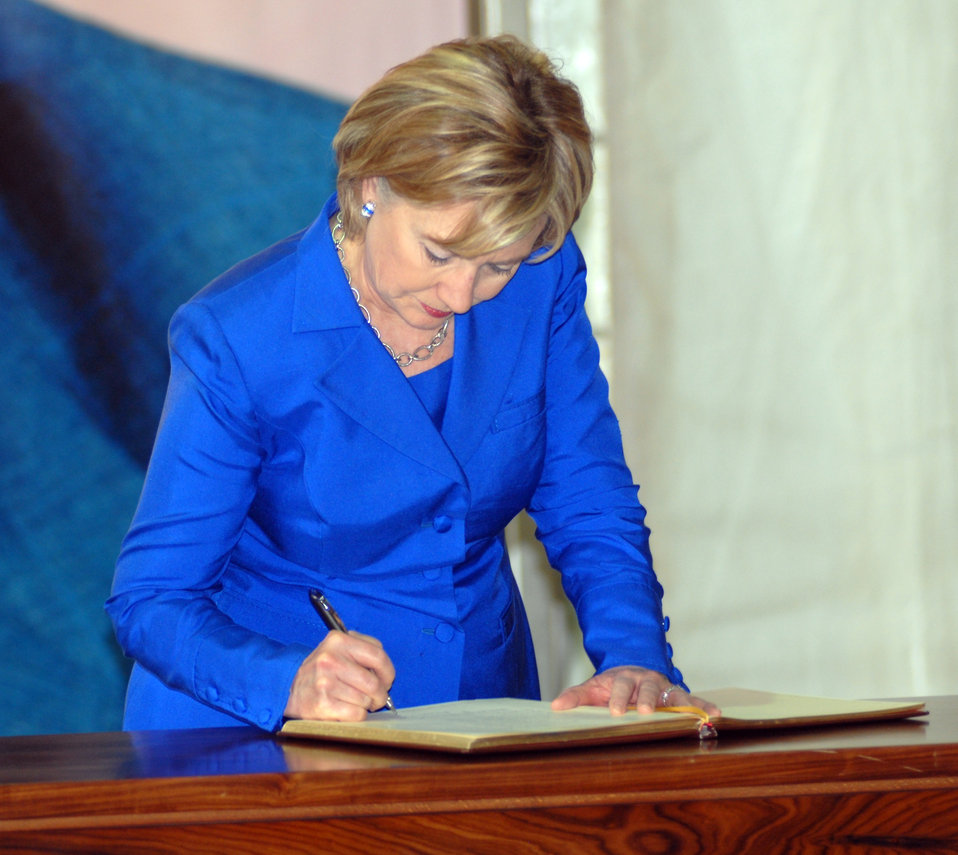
Secretary Clinton Visits Rafic Hariri Gravesite

U.S. Secretary of State Hillary Rodham Clinton signs condolence book at the gravesite of former Lebanese Prime Minister Rafic Hariri in Beirut, Lebanon April 26, 2009.